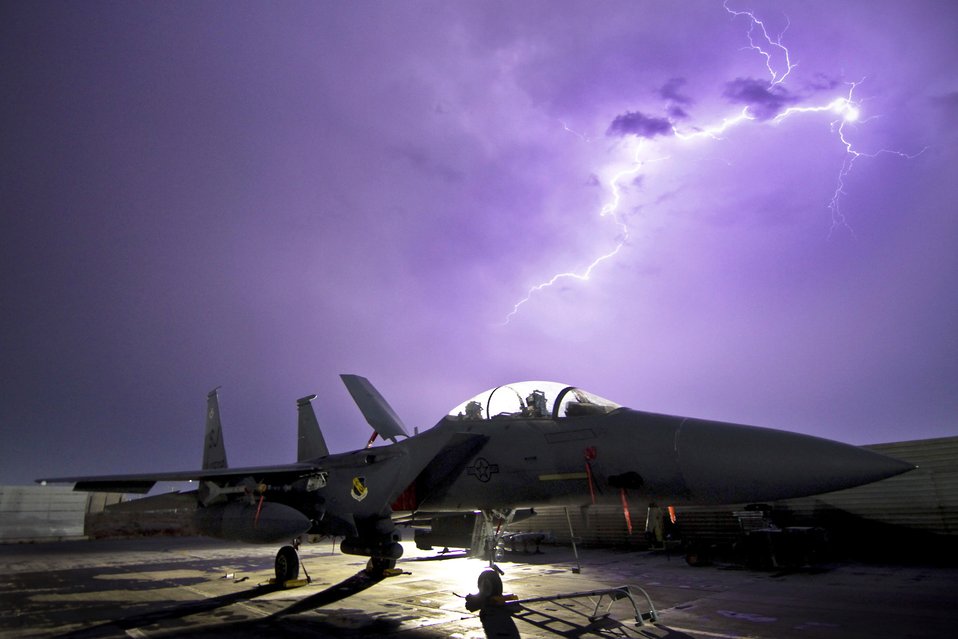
Eagle lightning

An F-15E Strike Eagle is illuminated by a lightning storm Oct. 6, 2011, at Bagram Air Field, Afghanistan.